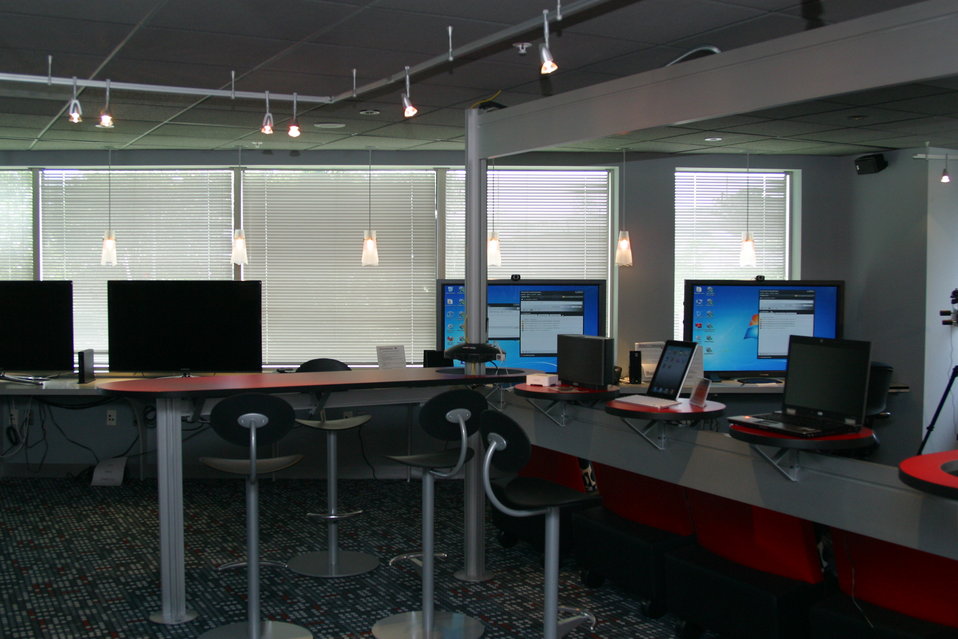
TEC Center1

Debuting the FCC TEC Center on Wednesday July 13, 2011